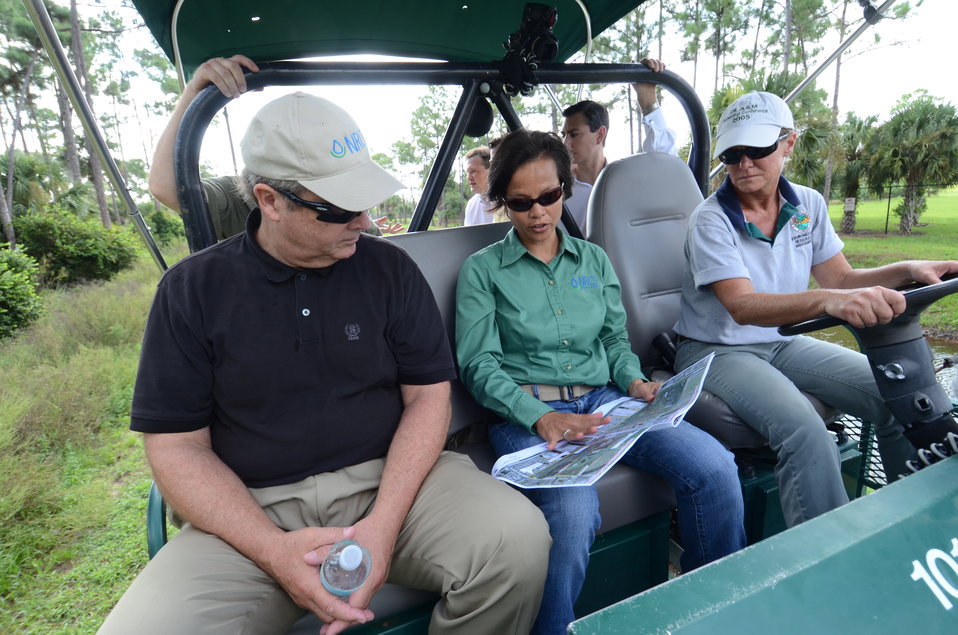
Agriculture Secretary Tom Vilsack rides along with USDA, National Resources Conservation Service Nga Watts and Palm Beach County Board of County Commissioners, Department of Environmental Resource Management, Natural Resources Stewardship Environmental Program Supervisor Brenda Hovde (driving) to see the Winding Waters Natural Area, FL, on Thursday, August 8, 2011.